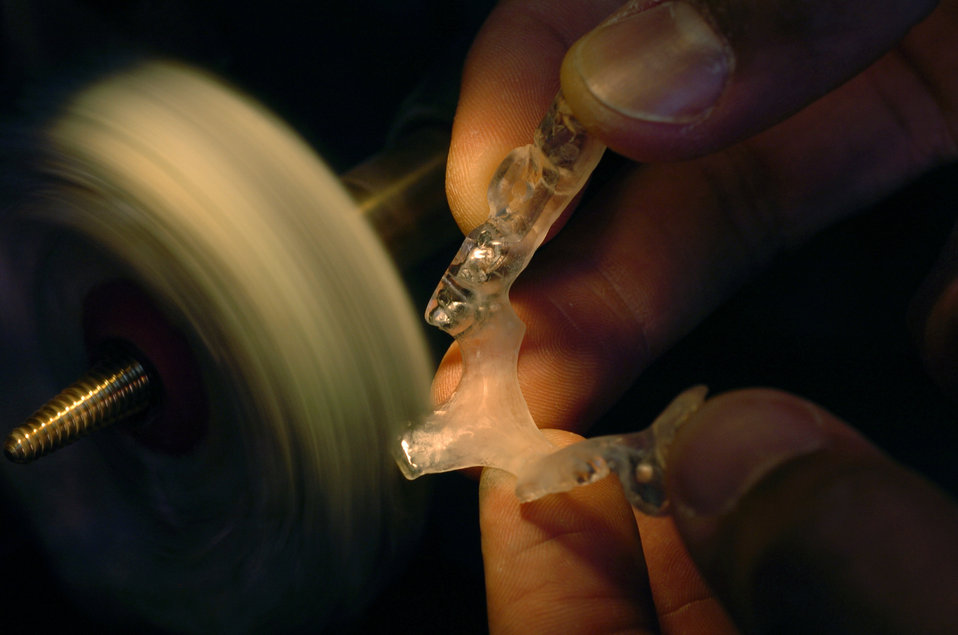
Dental lab techs keep Pacific forces smiling

YOKOTA AIR BASE, Japan -- Tech. Sgt. Keith Kinmon uses a trimmer to form a cast. He is a dental laboratory technician assigned to the 374th Dental Squadron here. The squadron's Airmen ensure maximum wartime readiness of Pacific Command people by providing comprehensive dental care for the active-duty servicemembers and other eligible beneficiaries here.